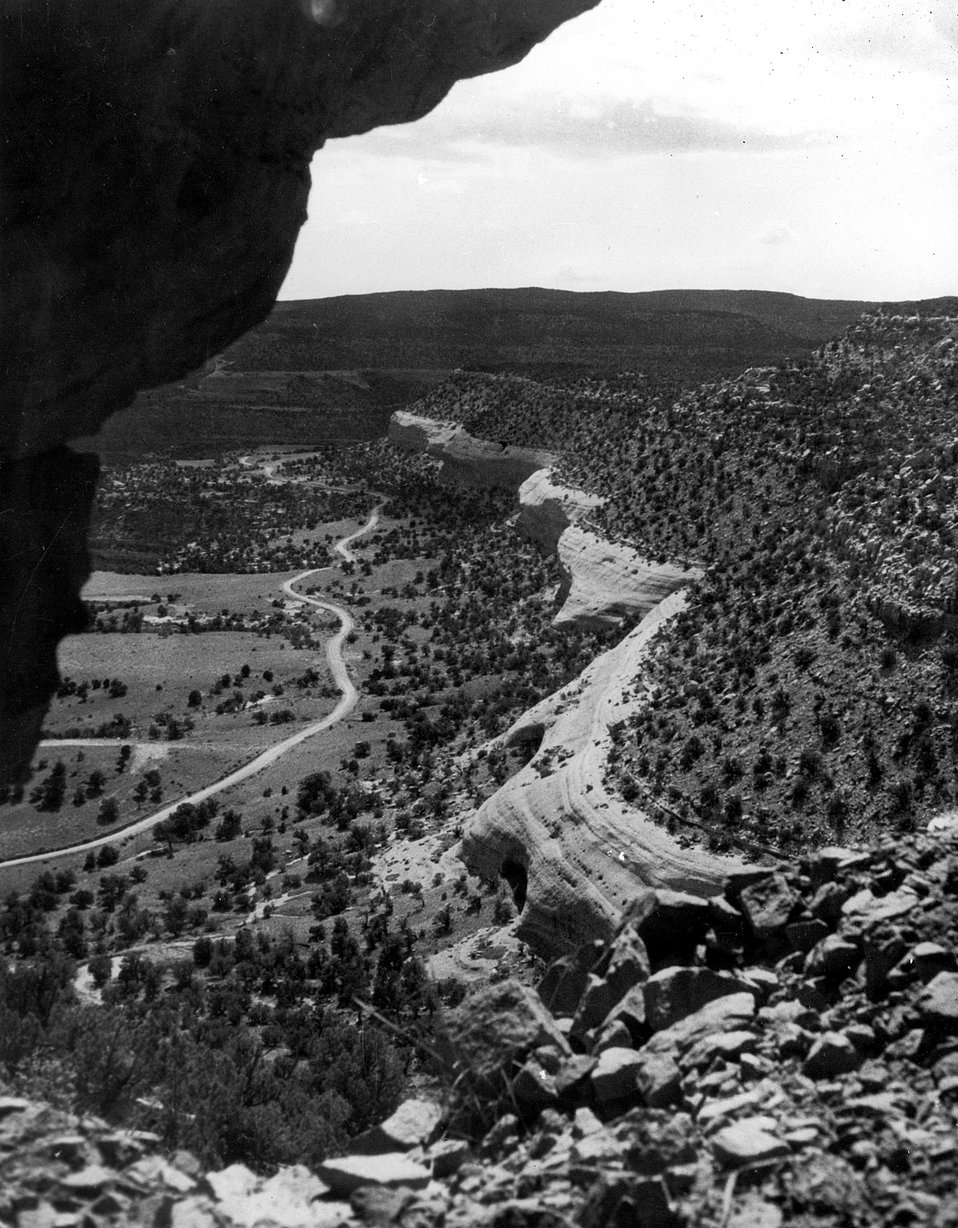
Uranium is usually found in what is known as the 'Saltwash' sandstone section above the 'slick rock' formation. Colorado State Highway 141 -- 'the Uranium Road' -- can be seen below. c. 1955